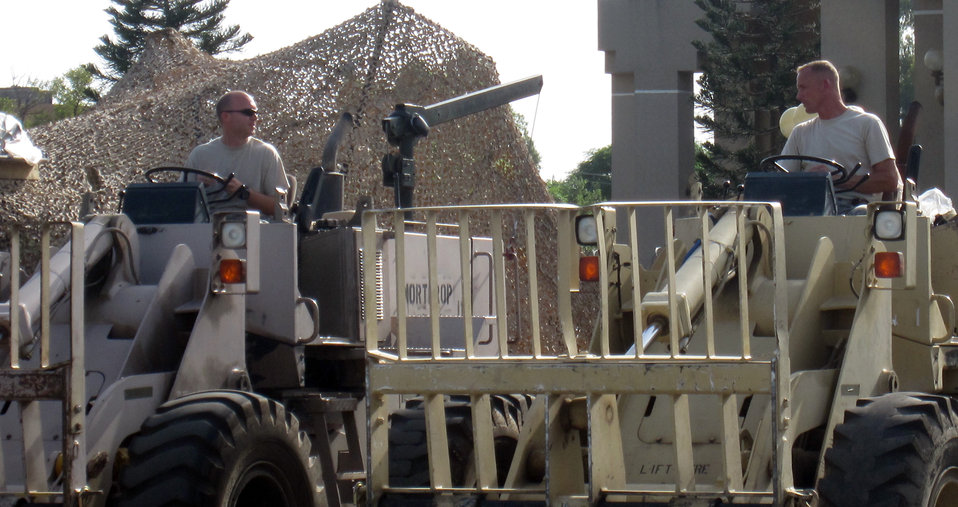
621st CRW

Two members of the 621st Contingency Response Element wait with forklifts for the arrival of another aid aircraft. The CRE team was responsible for palletizing and loading more than 20 million pounds of cargo for the people of Pakistan after devastating floods left millions of people homeless and more than 2000 dead.